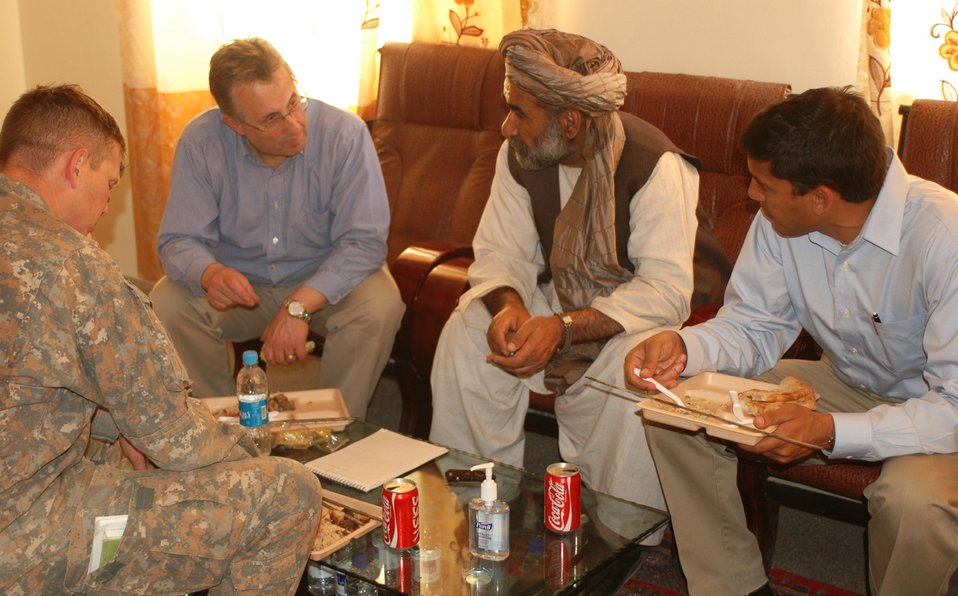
Dr Shah Visits Argandab April 10, 2010